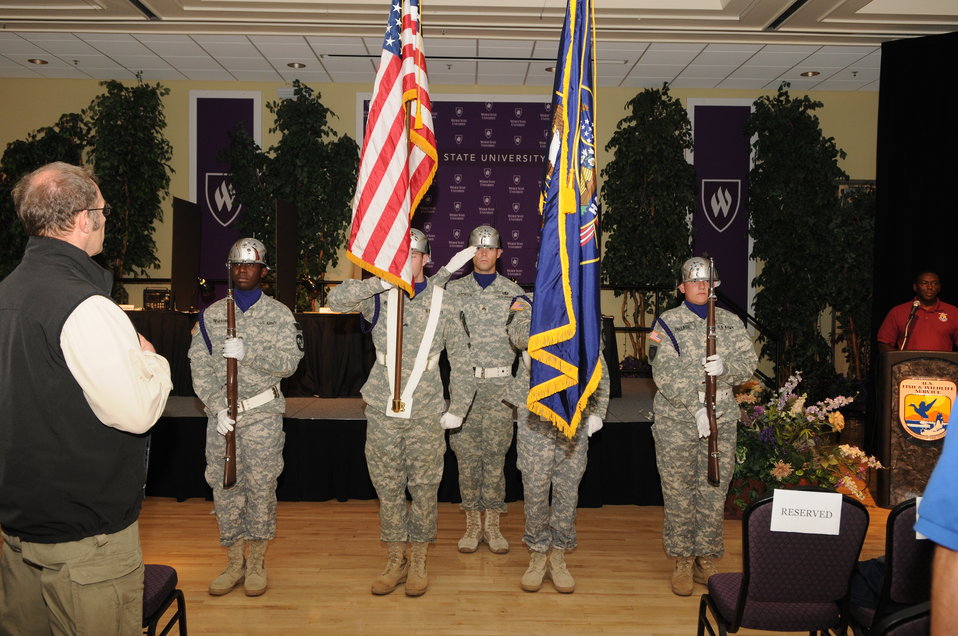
Presentation of Colors

The U.S. Fish & Wildlife Service sponsored the 2012 Federal Duck Stamp Art Contest September 28 and 29 in Ogden, Utah, at Weber State University. A panel of five judges was responsible for choosing the art work used to design the 2013-2014 Migratory Bird Hunting and Conservation Stamp.